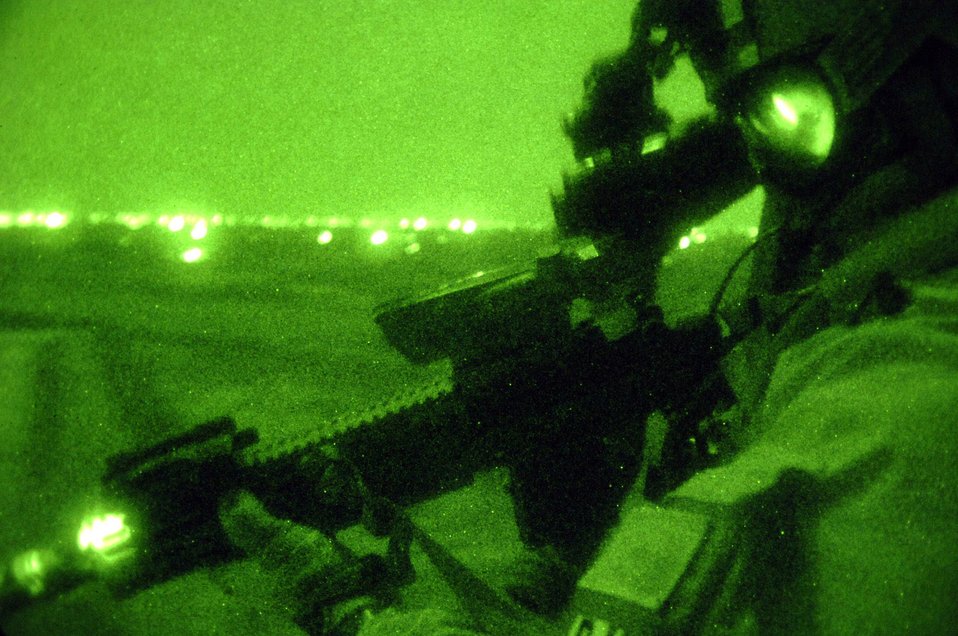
Pararescue Airmen mission ready for search, rescue

A pararescue jumper, equipped with night vision goggles, scans the Iraqi terrain during a combat search and rescue rehearsal mission Feb. 24 outside Balad Air Base, Iraq. He and his teammates use these rehearsal missions to stay proficient. They are assigned to the 64th Expeditionary Rescue Squadron.